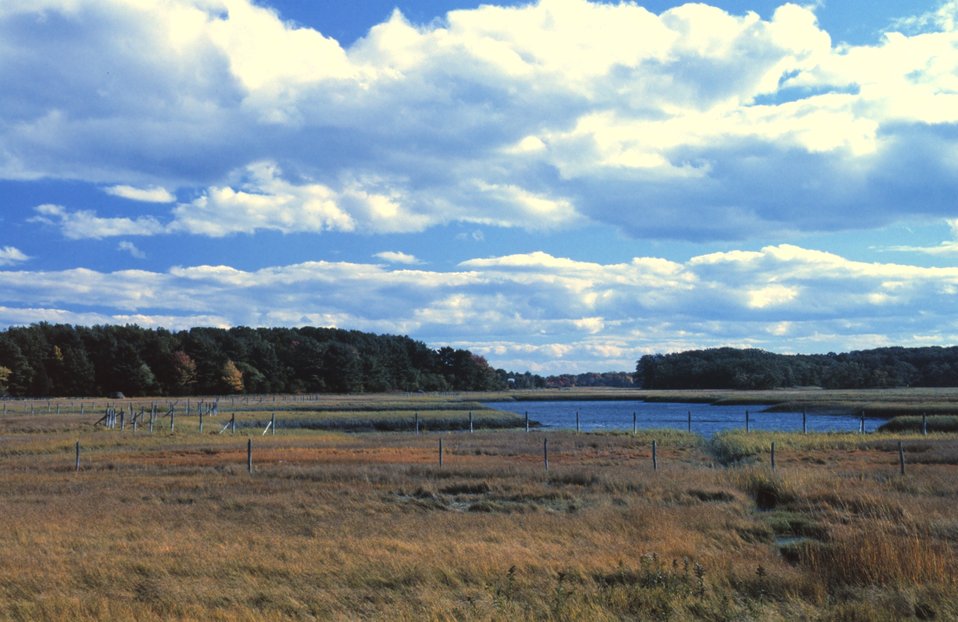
A view of wetlands at Great Bay National Estuarine Research Reserve.